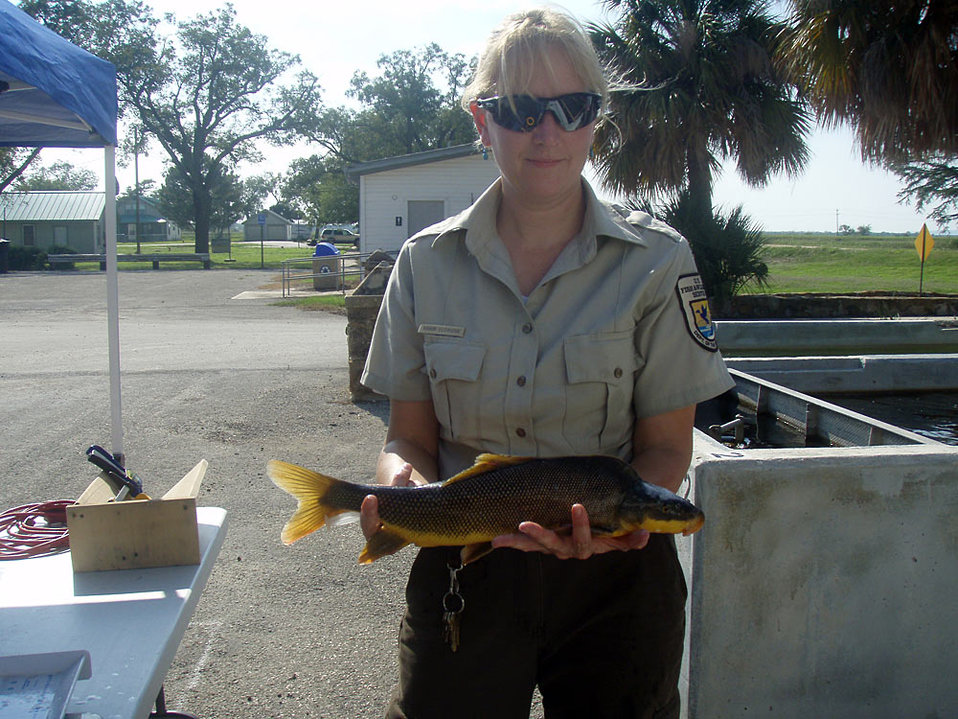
Karin Eldridge-Southwest Region

Karin Eldridge, a Fisheries Program Biologist in the Southwest Region, served in the Navy for six years. Among other species, she works with the endangered Razorback sucker.